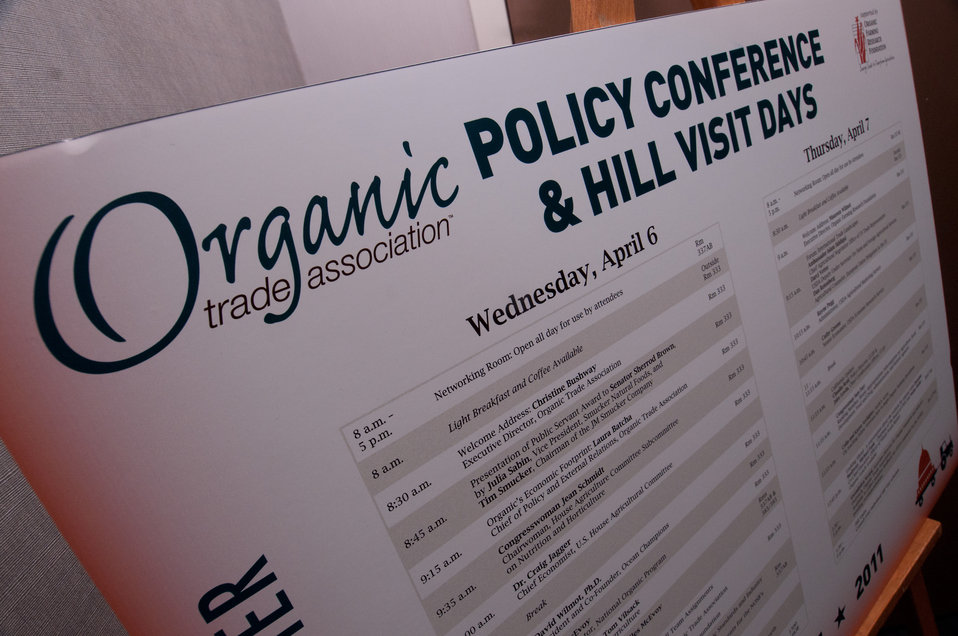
U.S. Department of Agriculture Secretary Tom Vilsack spoke at the Organic Trade Association’s 2011 Policy Conference and Capitol Hill Visit on Wednesday, April 6, 2011, at the Hall of States, in Washington, DC.